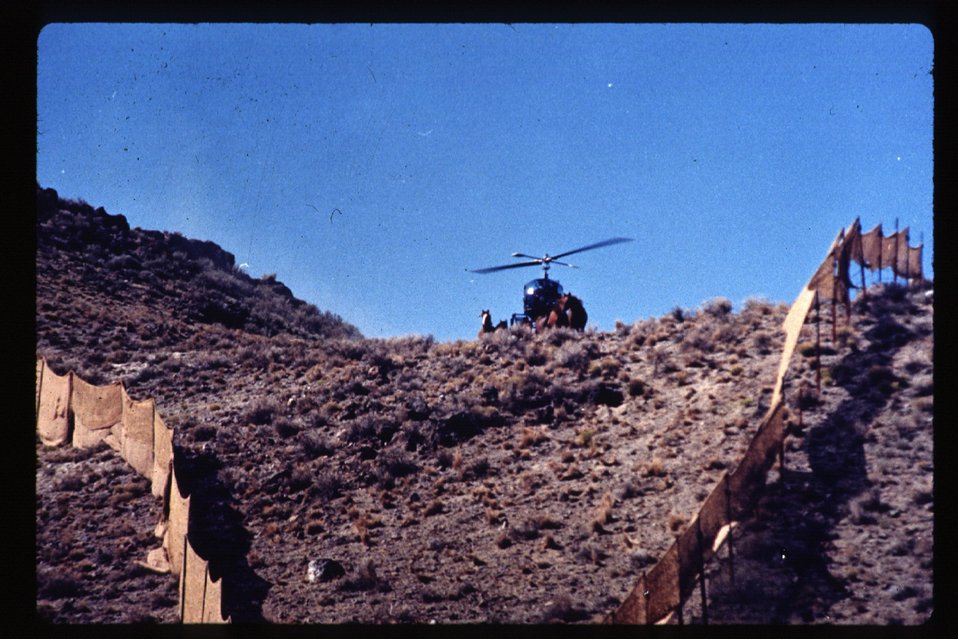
Helicopter herding wild horses Wild Horse and Burro Adoption Program LSRD Lower Snake River District